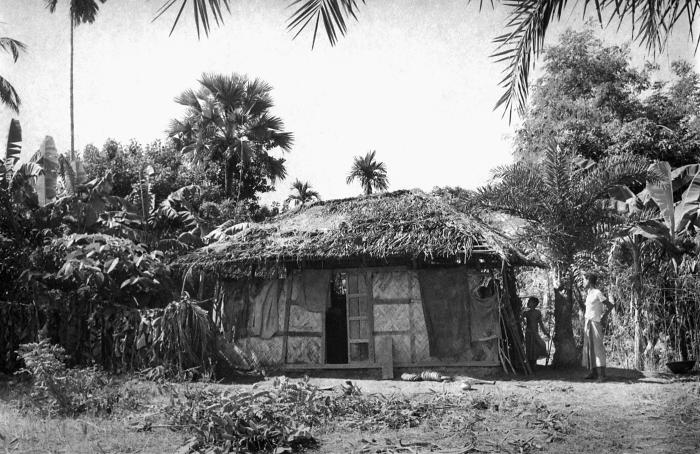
This image depicted a typical Bangladesh home with its thatched roof and walls, and wooden infrastructure. It was a permanent dwelling, as opposed to the 'temporary' structures erected by an area's transient populous. This photograph provided by Dr. Stan Foster, and captured by Pierre Claquin, M.D., B.A.C., who at the time was a member of the World Health Organization's Smallpox Eradication Program. It was part of a series photographed by former E.I.S. officer, Stanley O. Foster M.D., M.P.H., and was one of a series entitled 'The Story of One Smallpox Jeep', which depicted the travails faced by the jeep, and its occupants of public health practitioners, as they road through the Bangladesh countryside in an attempt to eradicate smallpox from the country.